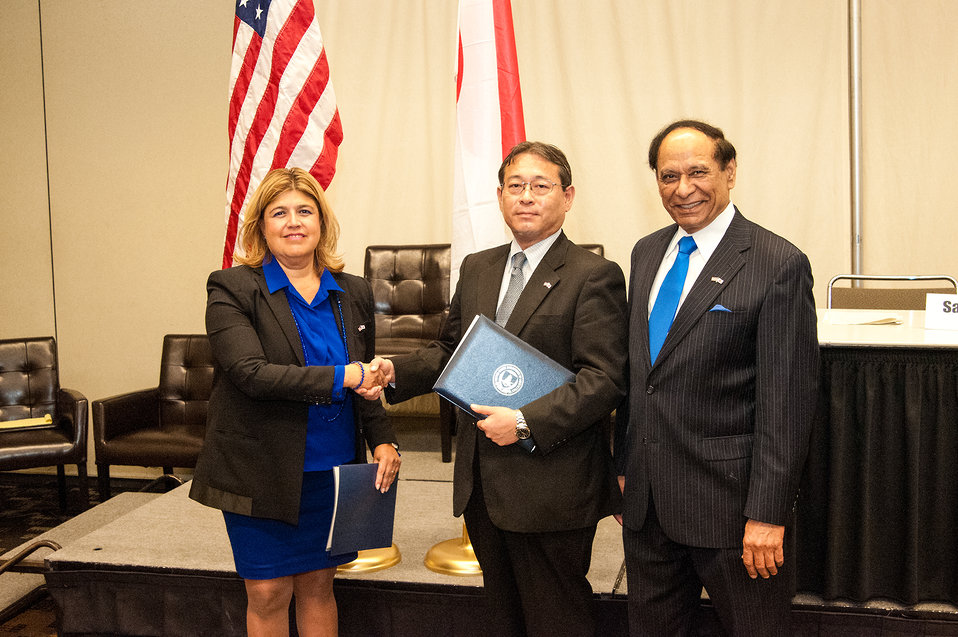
U.S. Department of Agriculture (USDA) Agricultural Marketing Service (AMS) Administrator Anne Alonzo shakes hands with Japan’s Forestry and Fishery Ministry of Agriculture Division of Food Safety and Consumer Affairs Bureau Director of Labeling and Standards Satoshi Kunii Satoshi Kunii with U.S. Trade Representatives Ambassador Islam Siddiqui Islam Siddi standing next to him after signing a memorandum of understanding prior to announcing an important trade agreement with Japan for USDA’s National Organic Program at the Natural Products Expo East conference in Baltimore, MD on Thursday, Sep. 26, 2013.